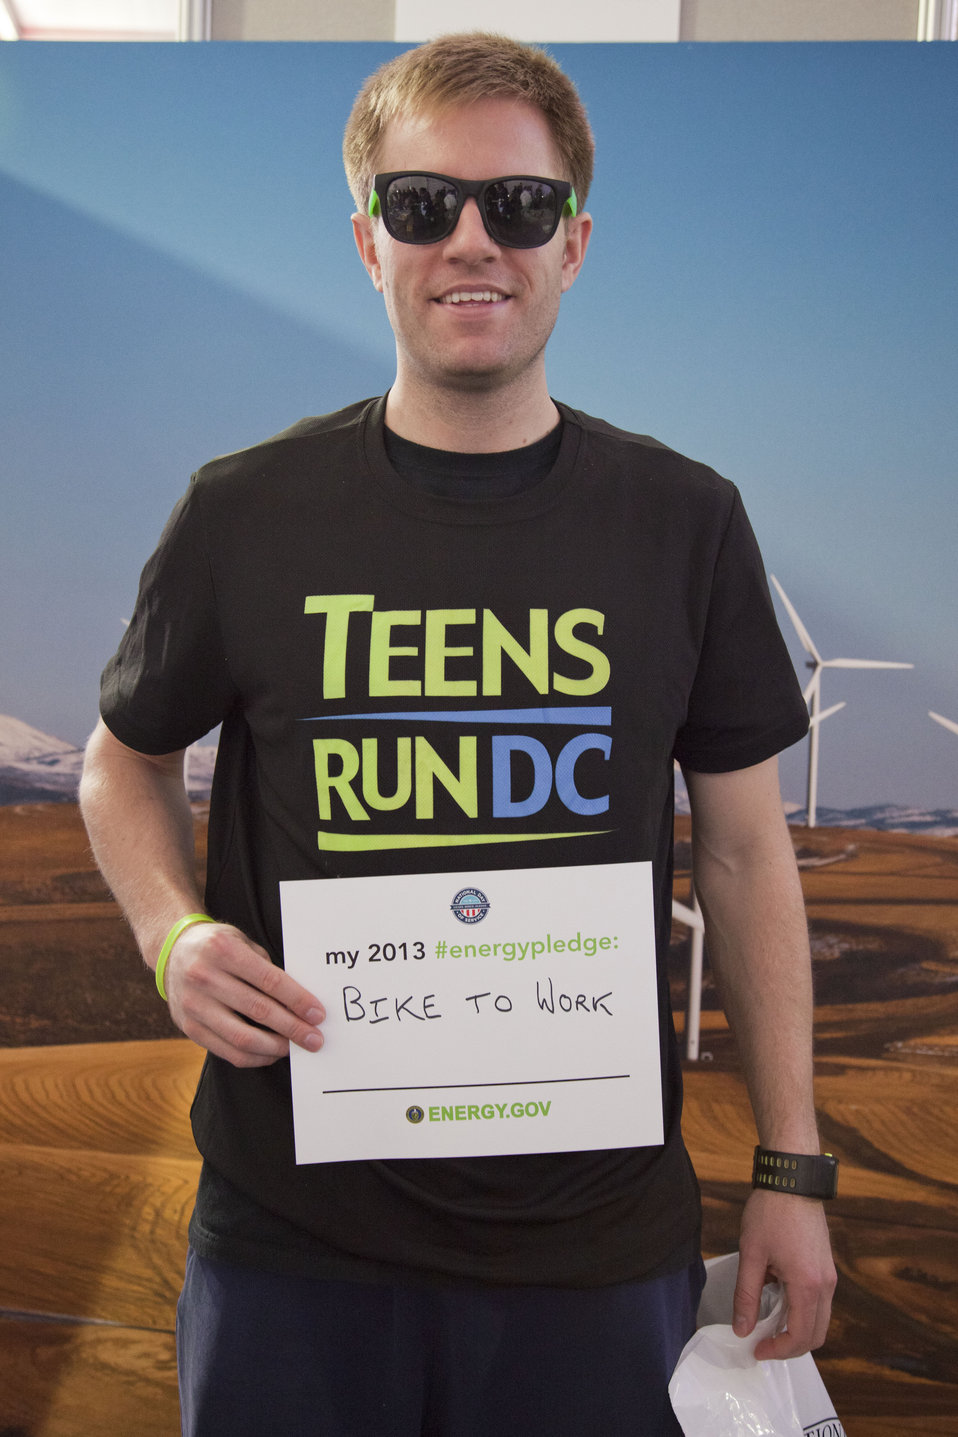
What's your #energypledge?